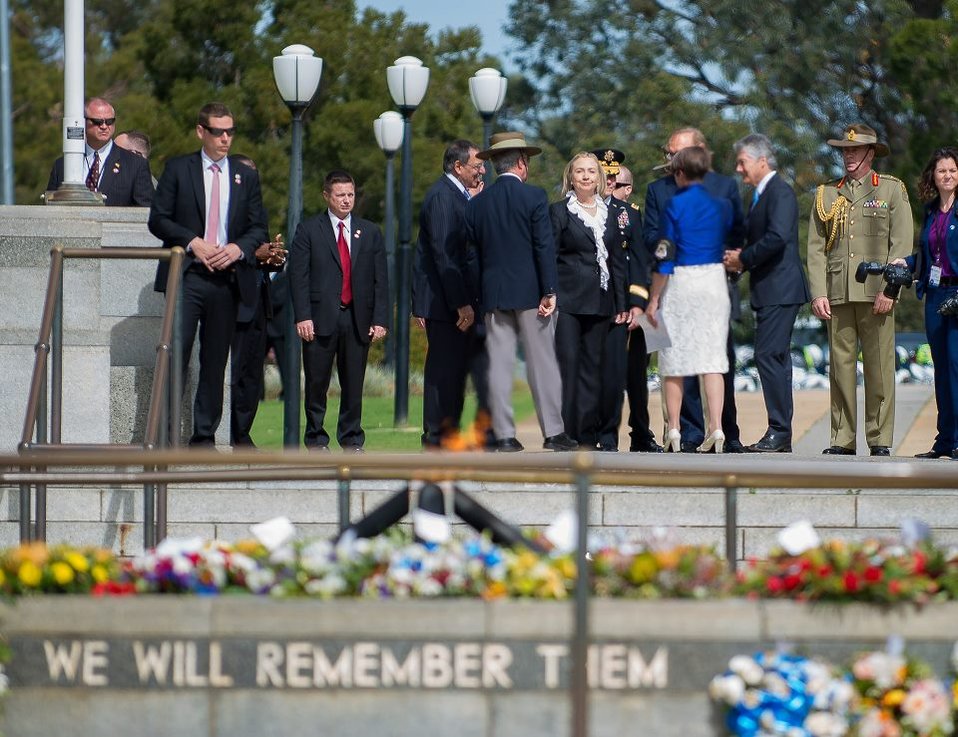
Secretaries Clinton and Panetta Speak With Australian Ministers Carr and Smith

U.S. Secretary of State Hillary Rodham Clinton and U.S. Secretary of Defense Leon Panetta speak with Australian Foreign Minister Robert Carr and Australian Defense Minister Stephen Smith before participating in a wreath-laying ceremony at the State War Memorial at Kings Park and Botanic Garden in Perth, Australia, November 14, 2012. [U.S. Embassy in Canberra, Australia photo by Travis Longmore/ Public Domain]